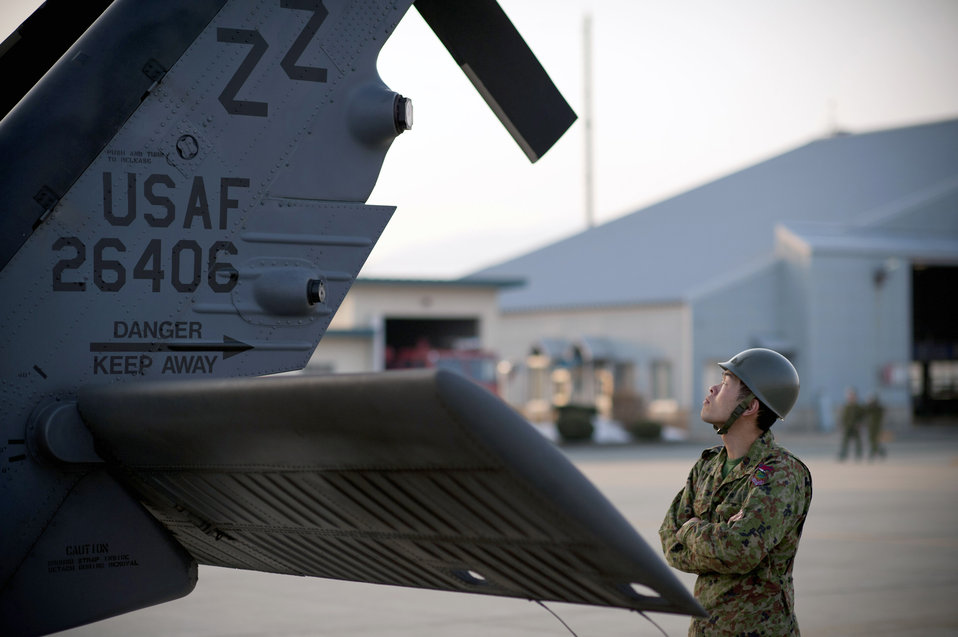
Yamagata a fuel staging area

A member of the Japan Ground Self-Defense Force observes a U.S. Air Force HH-60 Pave Hawk helicopter at Yokota Air Base, Japan, March 13, 2011. JGSDF members and a joint team of U.S. Air Force and Marine personnel discussed the possibility of using Yamagata as a fuel staging area to refuel aircraft assisting with Japan's earthquake and tsunami recovery efforts.